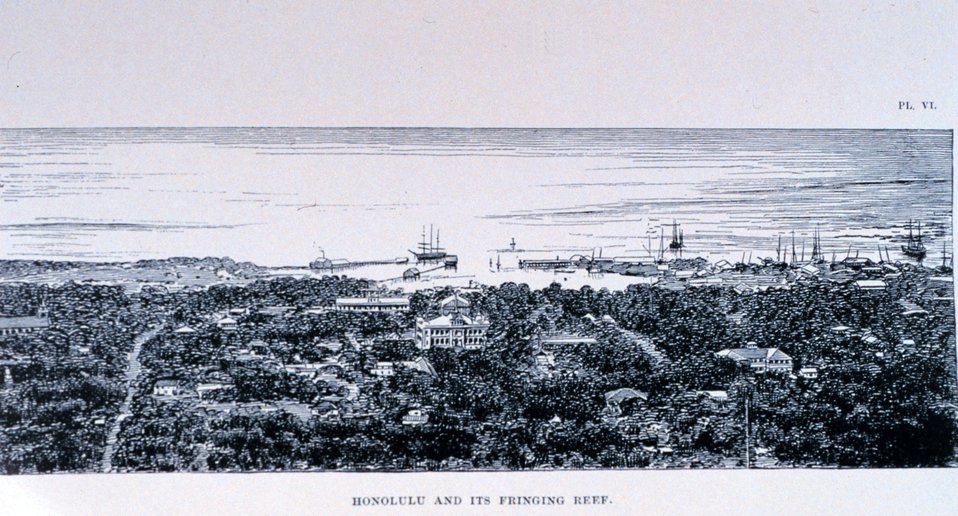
'Honolulu and Its Fringing Reef', Plate VI. In: 'Coral Reefs of the Hawaiian Islands' by Alexander Agassiz. April 1889. Bulletin of the Museum of Comparative Zoology, at Harvard College. Vol. XVII. No. 3. Library Call Number G161 A26.